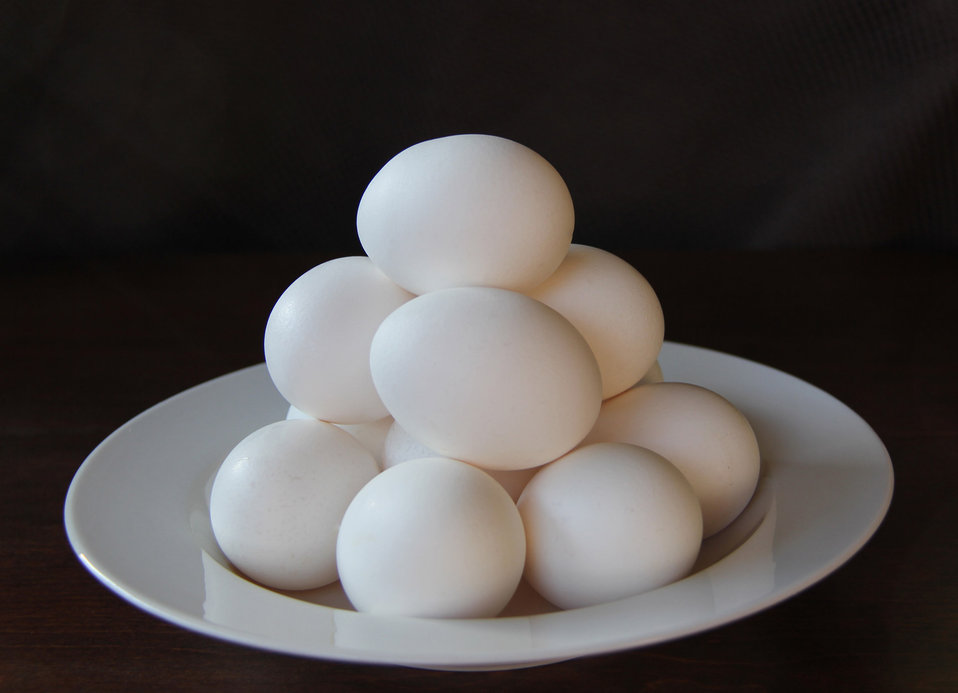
Bowl of eggs dark background

White eggs in white bowl dark background.